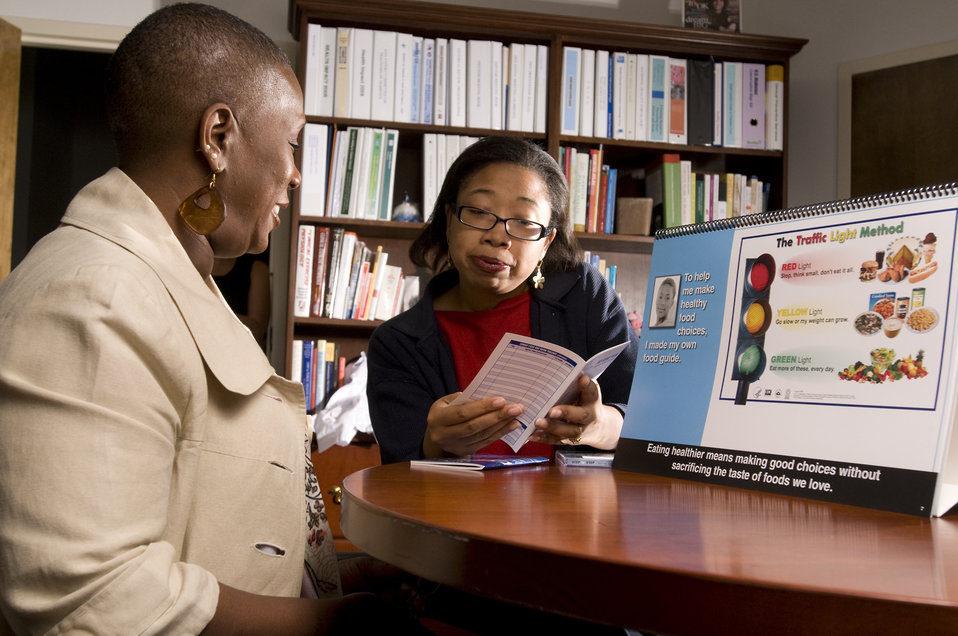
This image depicts a person with diabetes in the foreground listening to a community health worker familiar with the necessary diet needed to maintain control over the detrimental effects of this disease. The health worker was using a flip chart that, for the moment, was turned to a page discussing the use of the 'Traffic Light Method' to label foods. Here, the dietary specialist was providing answers to questions posed by the patient regarding the three food groups, by including some further literary content germane to the dietary topic.